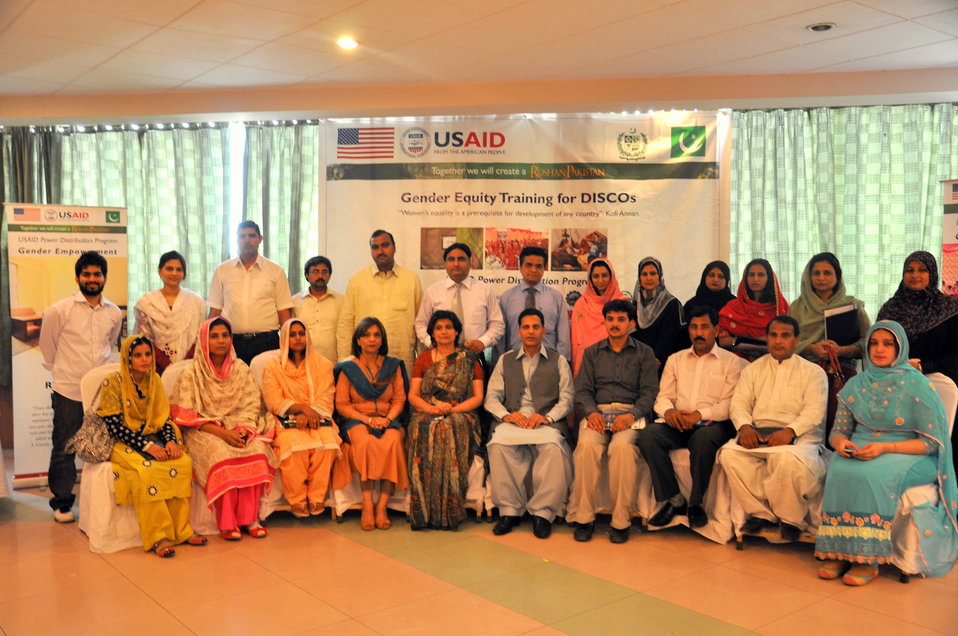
USAID helps reshaping the environment for women at DISCOs

Participants of Gender Equity Training from GEPCO.